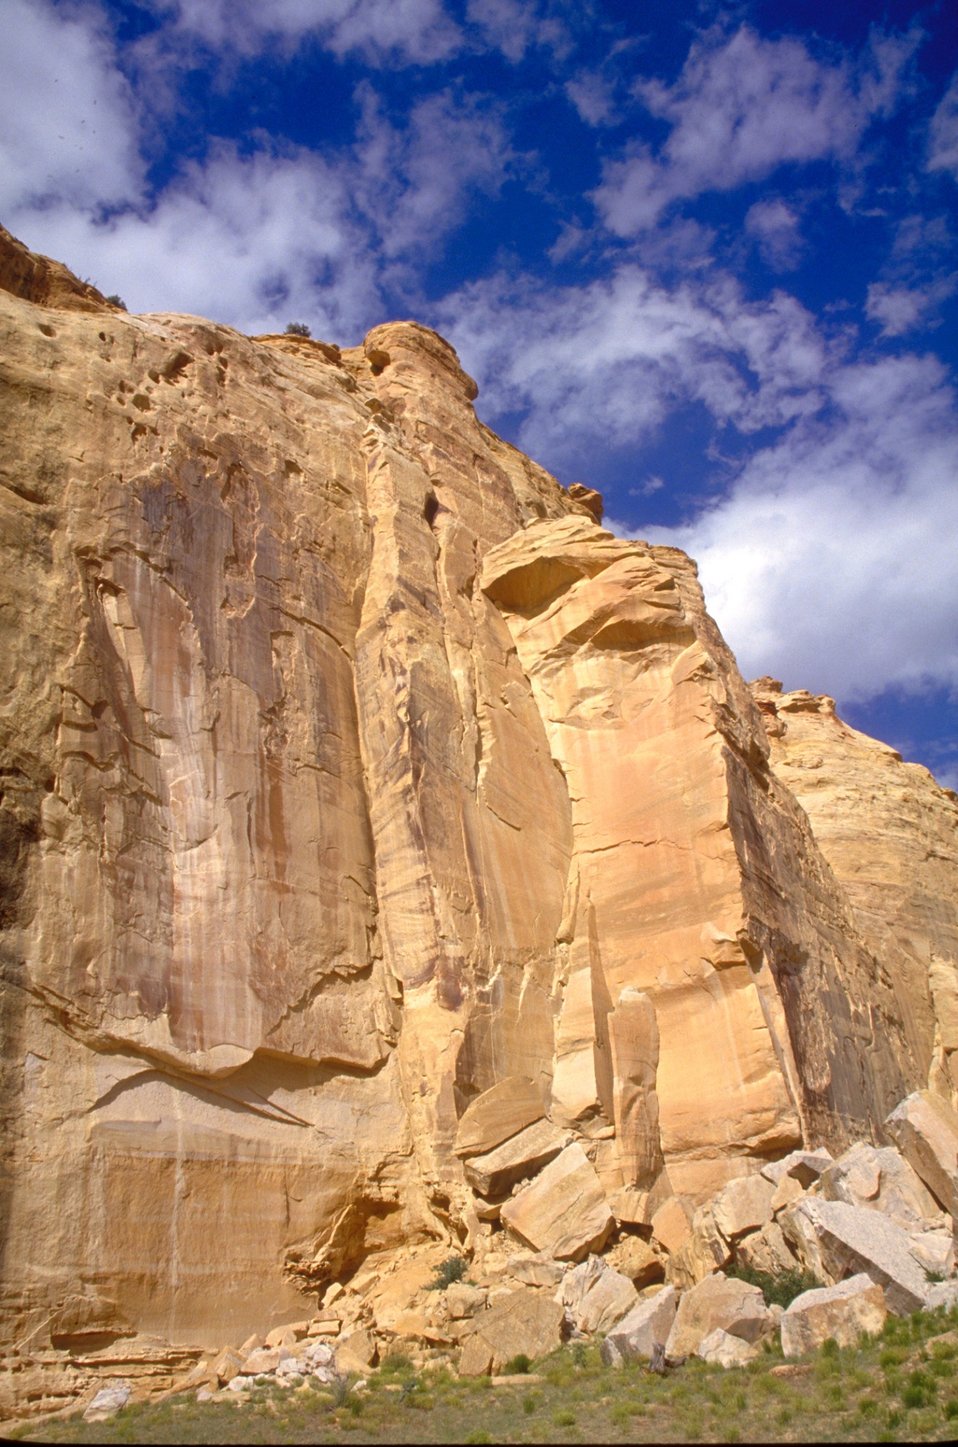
Head of Sinbad, San Rafael Swell